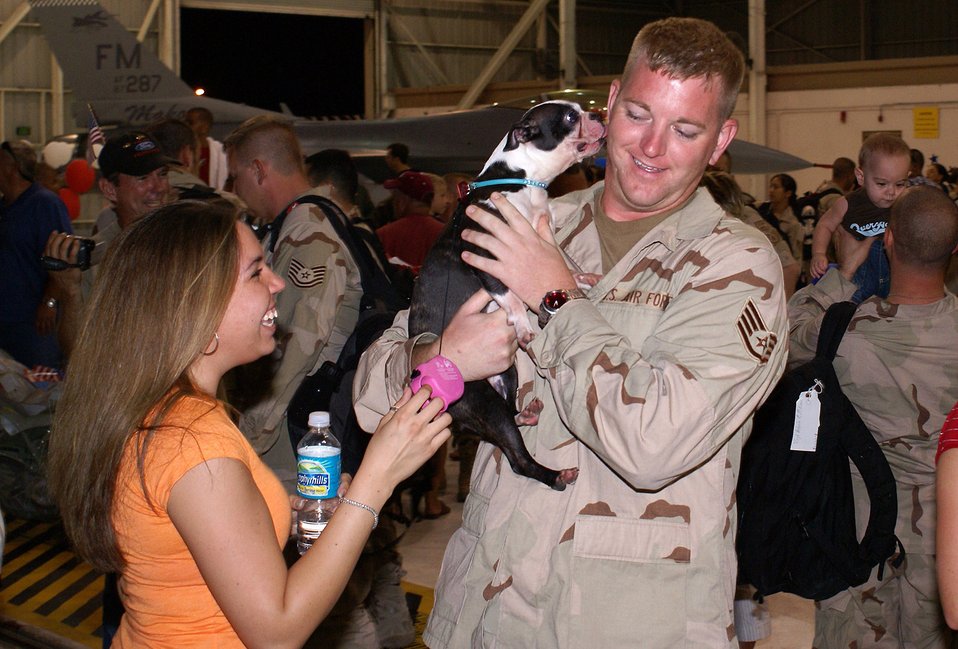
Homestead Airmen return from Iraq

Staff Sgt. Theodore Yoder is greeted by Roxy, his Boston Terrier, and Senior Airman Kristi Ayala-Rosado Aug. 13 at Homstead Air Reserve Base, Fla. More than 260 Airmen from Homestead ARB were welcomed home as they returned from a deployment to Balad Air Base, Iraq. Sergeant Yoder is a 482nd Maintenance Squadron crew chief, and Airman Ayala-Rosado is assigned to the 482nd Security Forces Squadron. Members of the 93rd Fighter Squadron from the 482nd Fighter Wing at Homestead ARB provided close-air support and surveillance and reconnaissance missions in support of U.S. and coalition ground forces.